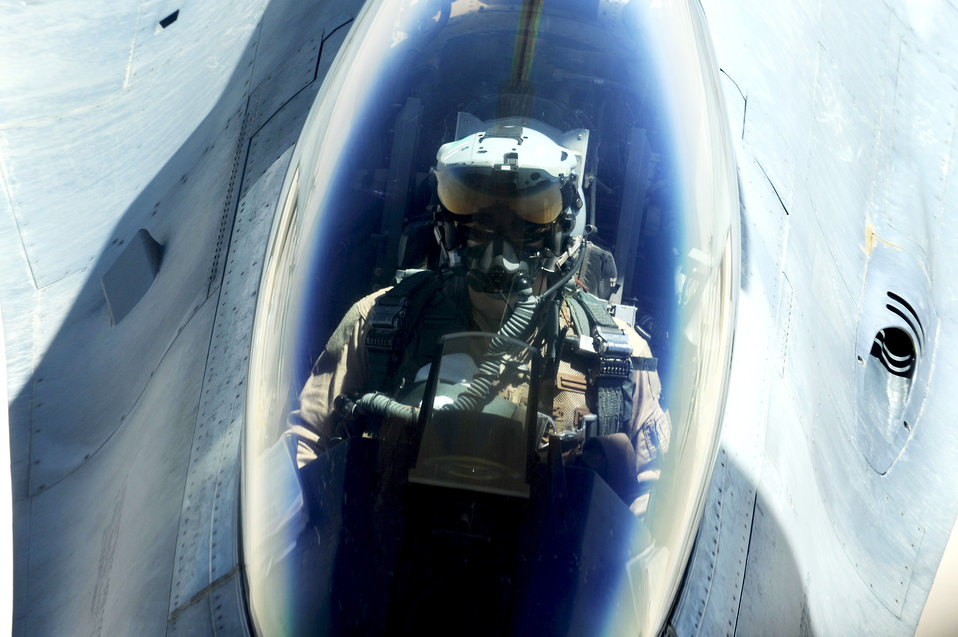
Refueling operations over Iraq

The pilot of the F-16CJ Fighting Falcon watches as a KC-135 Stratotanker refuels his aircraft over Iraq July 28 in support of Operation Iraqi Freedom.